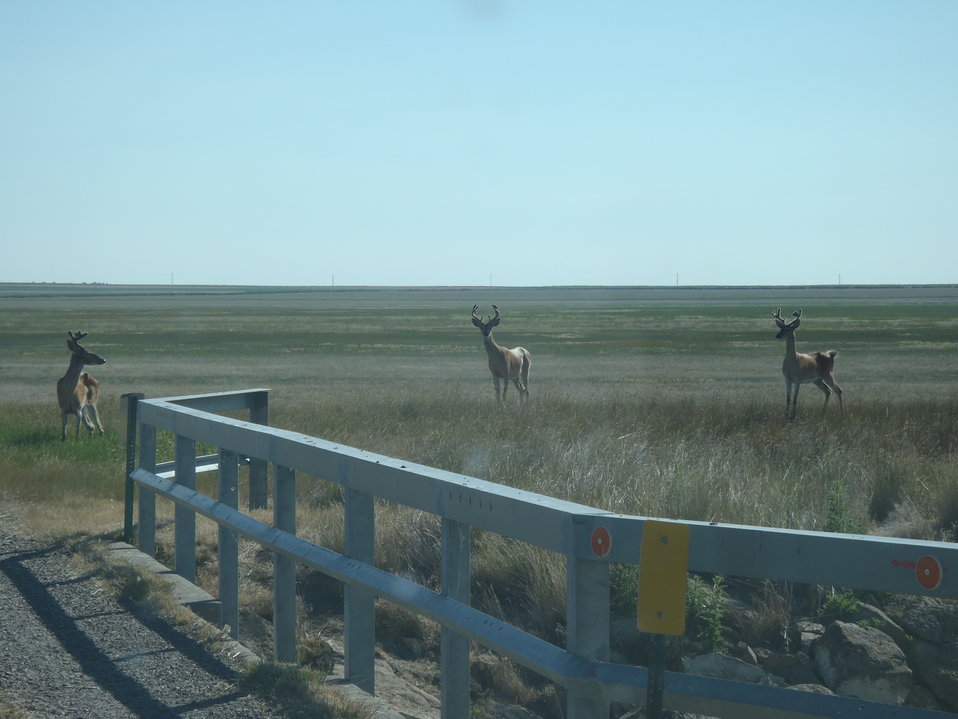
White-tailed Deer (Odocoileus virginianus)

White-tailed Deer are a common site on the Refuge.